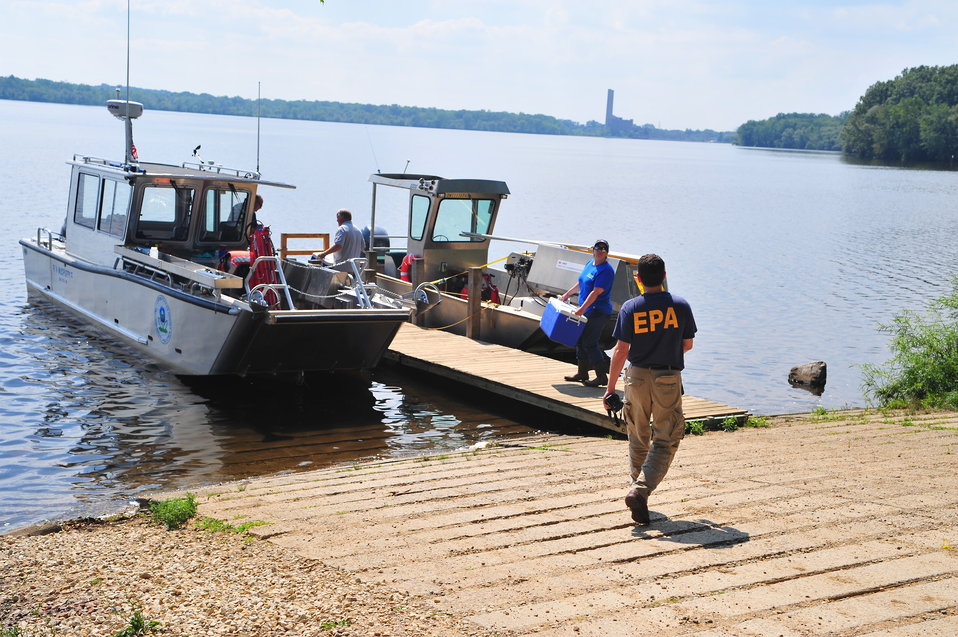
Mudpuppy, EPA research vessel

August 2, 2010 - The Mudpuppy II, EPA's newest research vessel, has been deployed for the first time to Lake Morrow, near Battle Creek, Michigan to take water and bottom sediment samples as part of the response to the Enbridge Oil Spill into Talmage Creek and the Kalamazoo River.